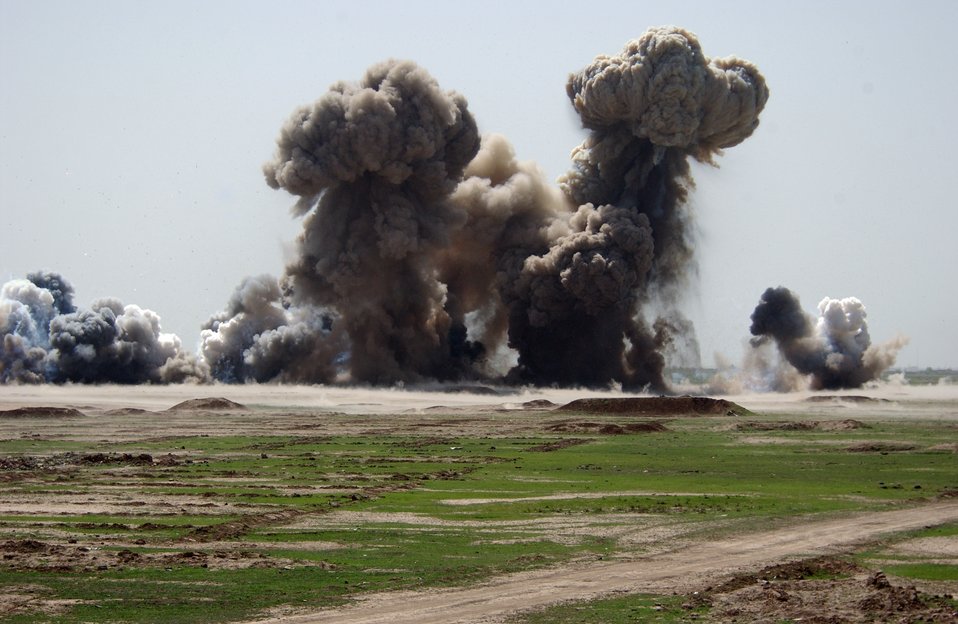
Having a blast

KIRKUK, Iraq -- Explosive ordnance disposal Airmen ignite more than 9,000 pounds of explosives. The Airmen are assigned to the 506th Expeditionary Civil Engineer Squadron at nearby Kirkuk Air Base.